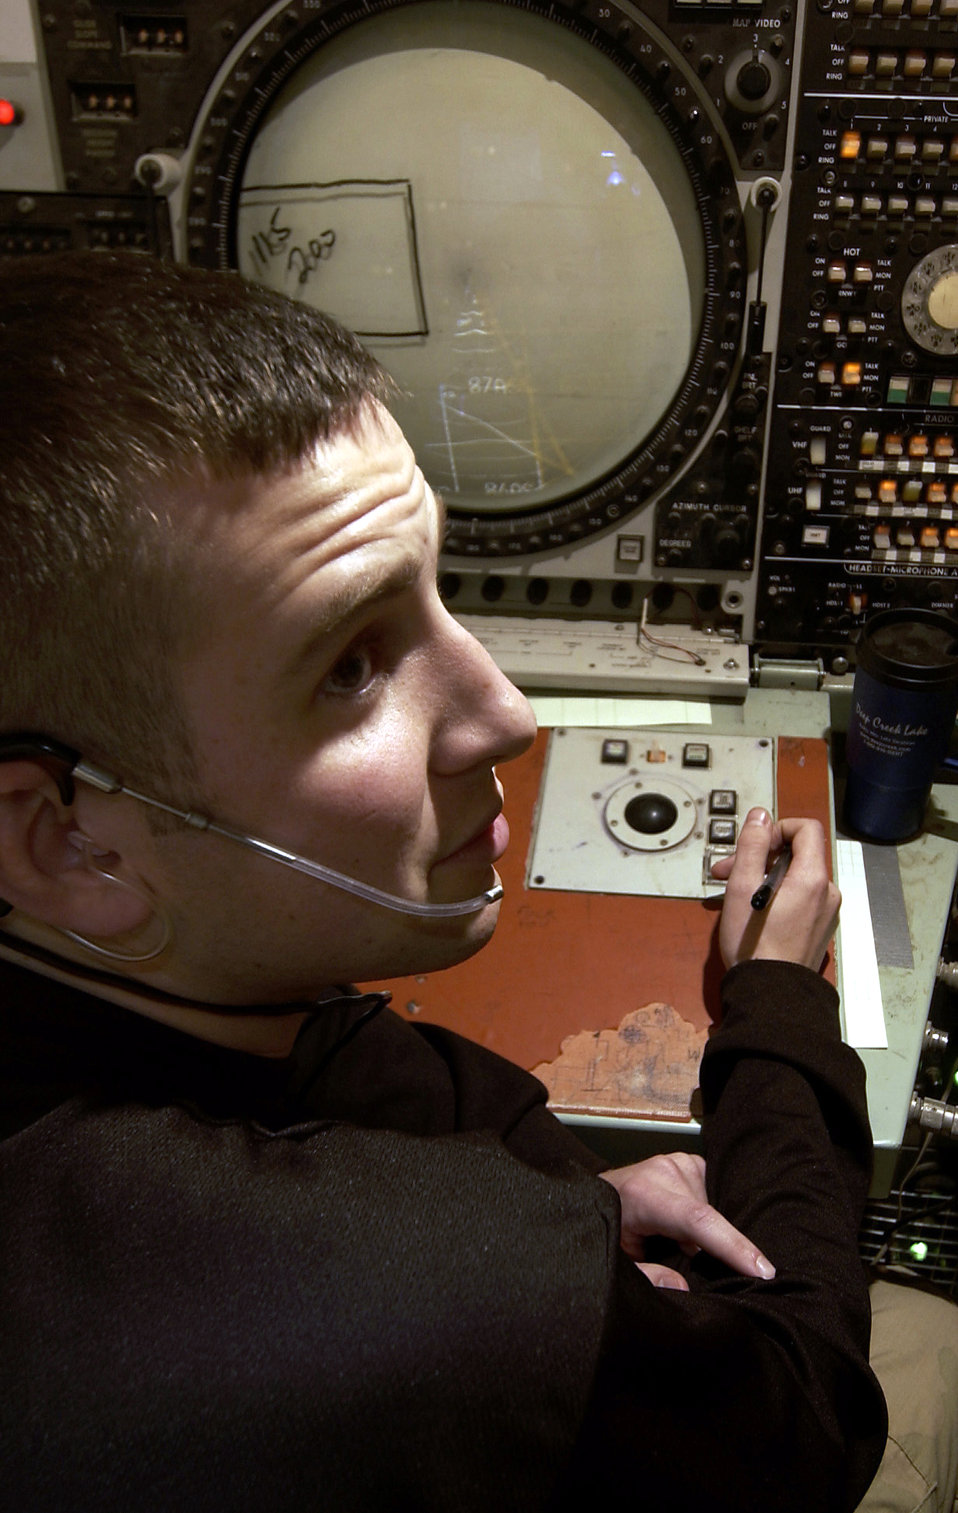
Constant vigil

BAGHDAD INTERNATIONAL AIRPORT, Iraq -- Senior Airman Albert Tooker uses a TPN-19 radar system to manage the air flow through the airport here Jan. 27. Airman Tooker is an air traffic controller with the 447th Expeditionary Operations Support Squadron.